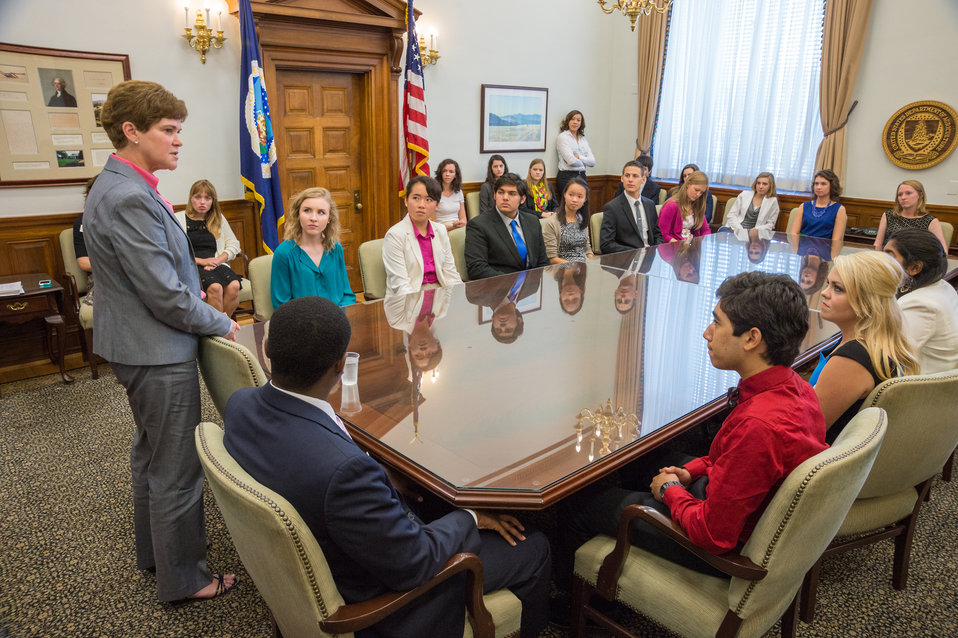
Agriculture Deputy Secretary Krysta Harden met with members of the Wallace-Carver Fellowship Leadership Symposium at the United States Department of Agriculture (USDA) in Washington, DC, Tue. Jun. 17, 2014. The theme of the 2014 Wallace Carver Fellowship is, “The Single Greatest Challenge in Human History-Sustainable Feeding Nine Billion People by 2050.” Named for Henry A. Wallace and George Washington Carver, two of the great American leaders in agricultural science and policy who made significant strides toward ending hunger in the 20th Century, the Wallace-Carver Fellowship seeks to educate, inspire and train the next generation of agricultural leaders, who will lead us in the 21st century.